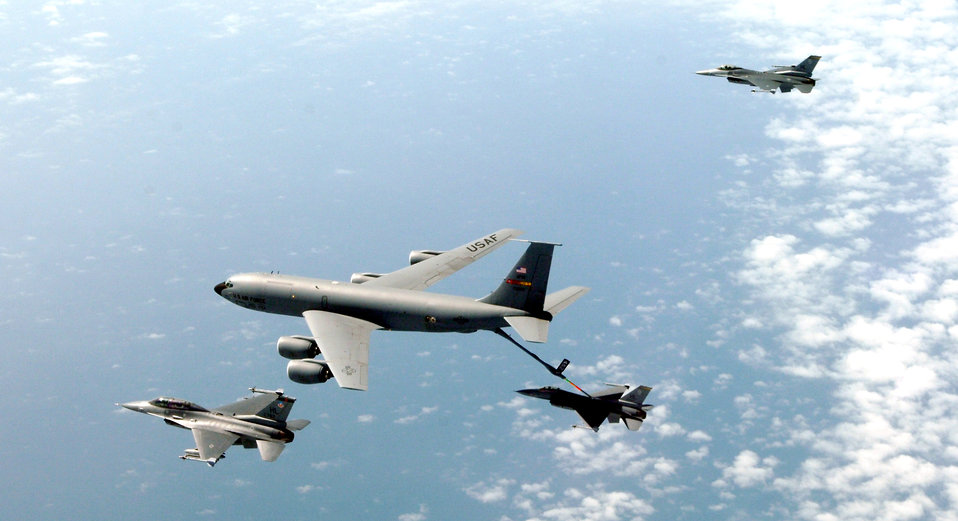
Airmen work alongside Peruvian military during joint exercise

An F-16 Fighting Falcon refuels from a KC-135 Stratotanker over Peru in support of the Falcon and Condor 2007, a joint exercise between the U.S. and Peruvian Air Forces. The exercise allows the U.S. military to build relationships with military and civilian leaders of Peru. The F-16 is from the 34th Fighter Squadron at Hill Air Force Base, Utah, and the KC-135 is assigned to the 336th Air Refueling Squadron at March Air Reserve Base, Calif.